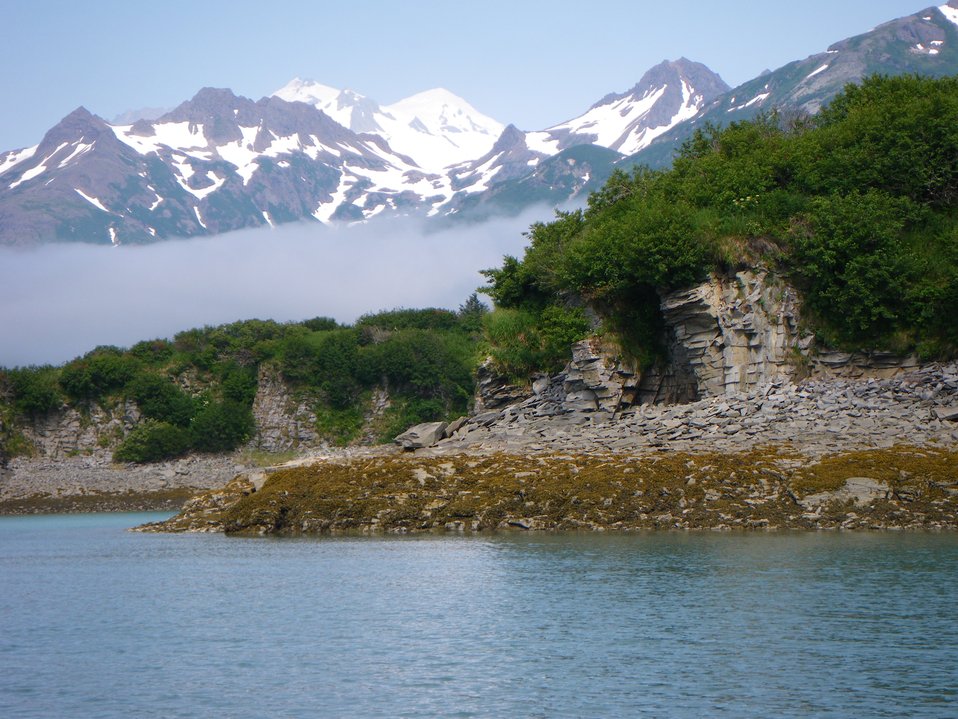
Kukak Bay at about half-tide as indicated by image line4994. zonation of algae species showing on far bank of tidal inlet.